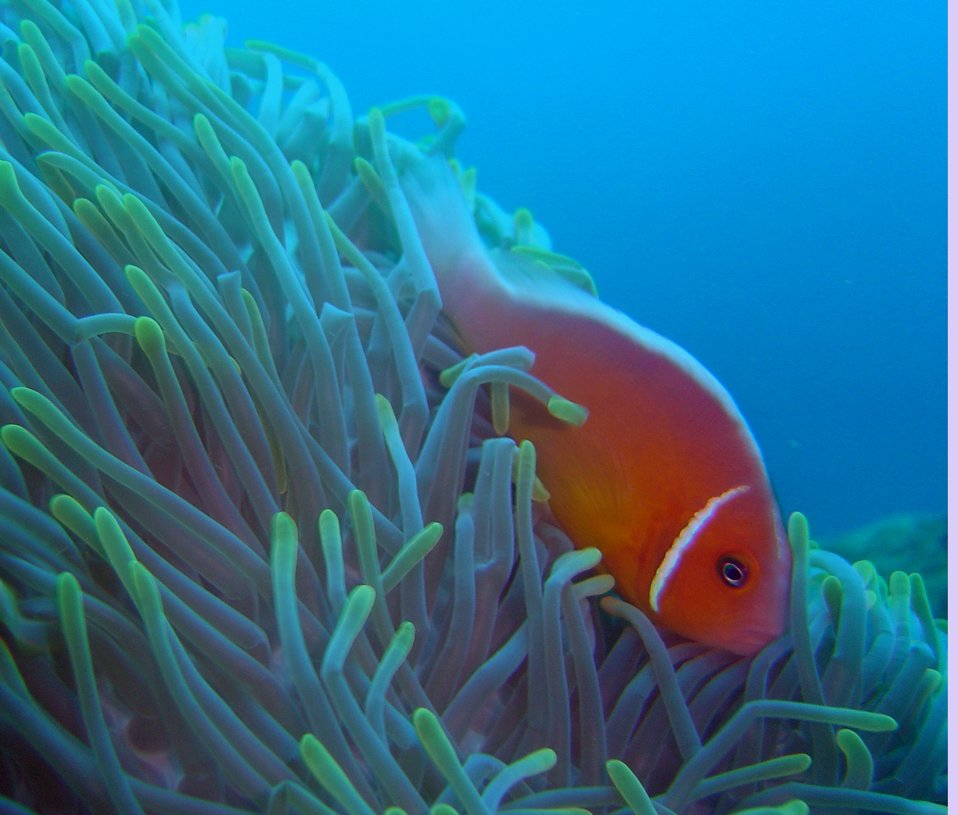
Pink anemonefish (Amphiprion perideraion).